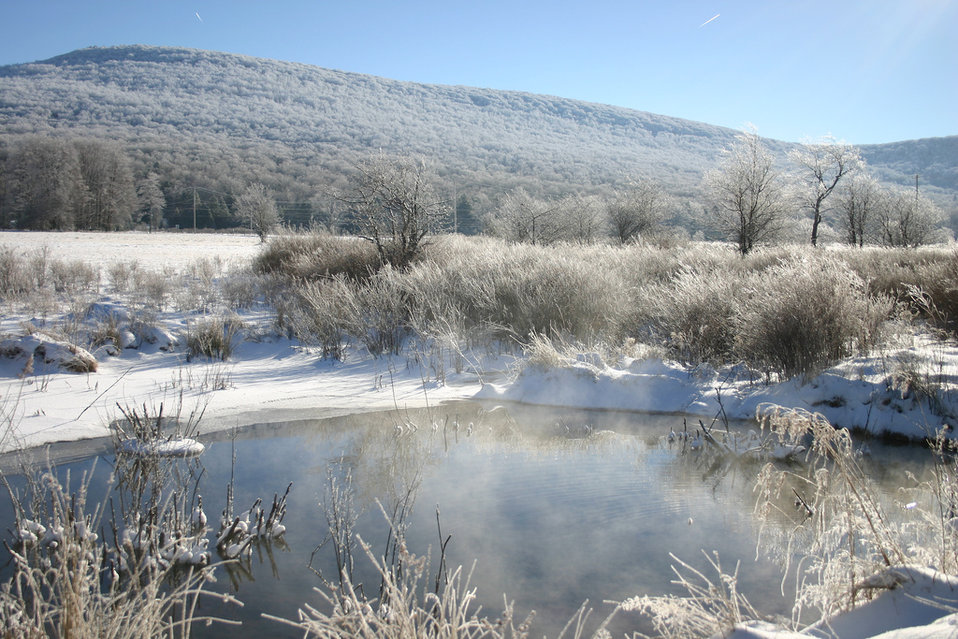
Pond in Winter